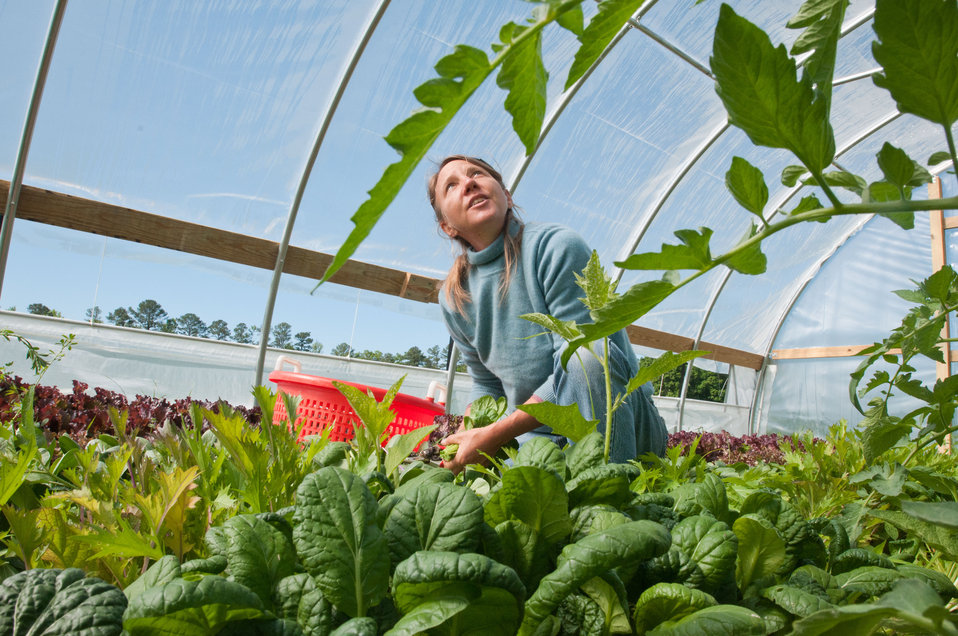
Amy's Organic Garden in Charles City, VA, on Thursday, May 5, 2011. Owner Amy Hicks harvesting greens at her farm. Ms. Hicks' farm participates with Fall Line Farms a local food cooperative in the Richmond, VA area that offers a wide variety of household food staples and specialty items on an ever changing inventory of fruits, vegetables, meats, soaps, eggs, cheeses, flowers, honey, pastas, sauces, syrups, baked goods, mushrooms, flour and grains. Suppliers post what they have on a Lulus Local Food online listing and customers can make their selection. Every Thursday suppliers deliver orders to, one of several pick-up points, designated by the customers in or around the Richmond area.